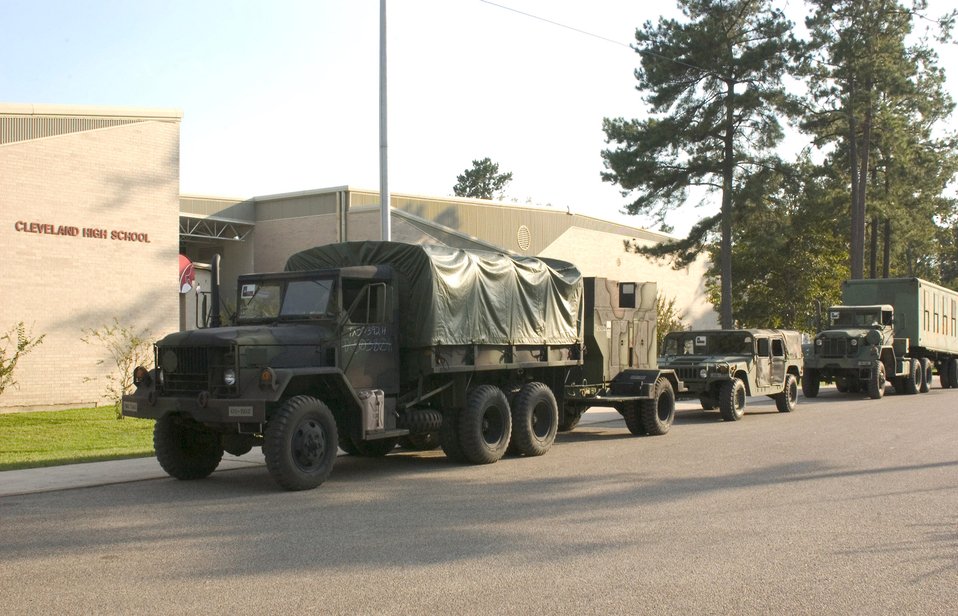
Texas National Guard relief mission begins drawing down

CLEVELAND, Texas -- Texas National Guard vehicles line up in front of a local high school in preparation for departure Oct. 5. Three hundred guardsmen with Task Force-Seguin staged out of the school to assist with food and water distribution in surrounding counties after Hurricane Rita.